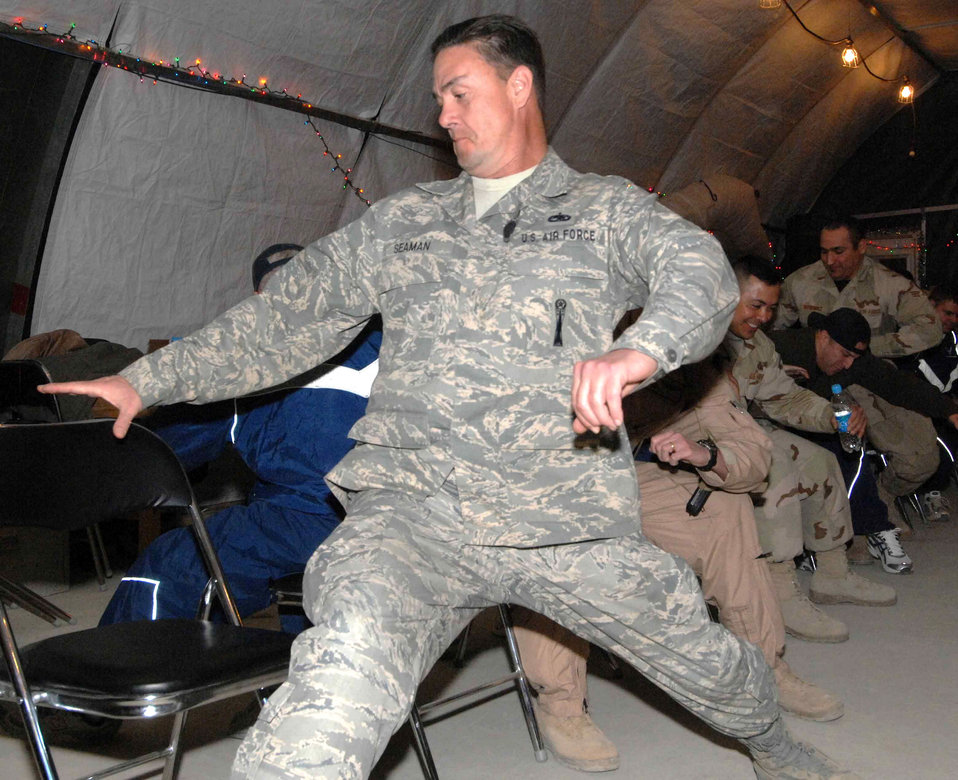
Bagram Airmen celebrate season

Master Sgt. Mark Seaman races for a seat as part of a